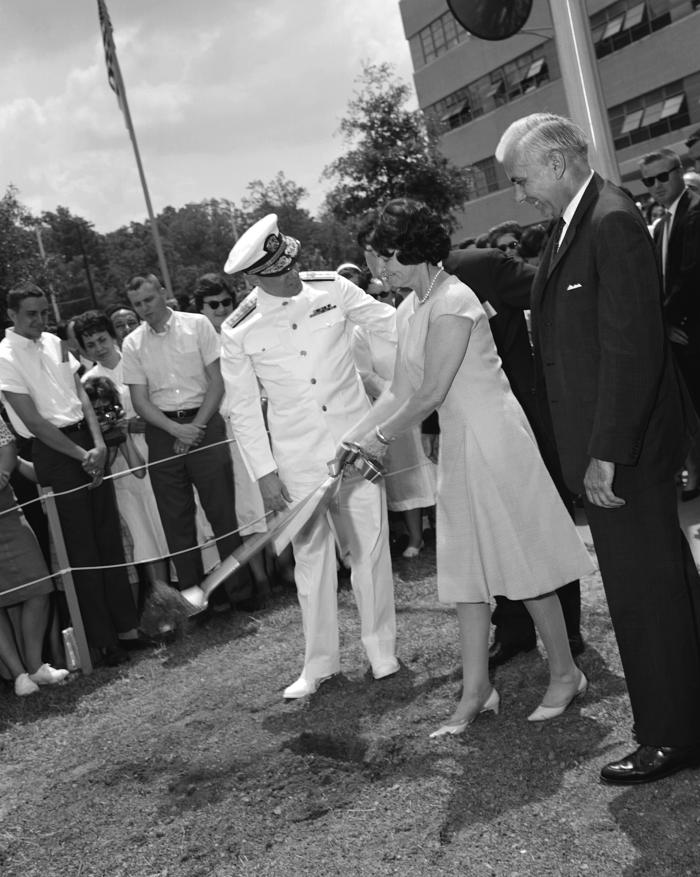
This historic 1964 image depicted former First Lady, Claudia Alta 'Lady Bird' Taylor Johnson, as she was wielding a shovel, while attending a Centers for Disease Control outdoor ground-breaking ceremony, which would lead to the construction of the former Auditorium B, which no longer exists.